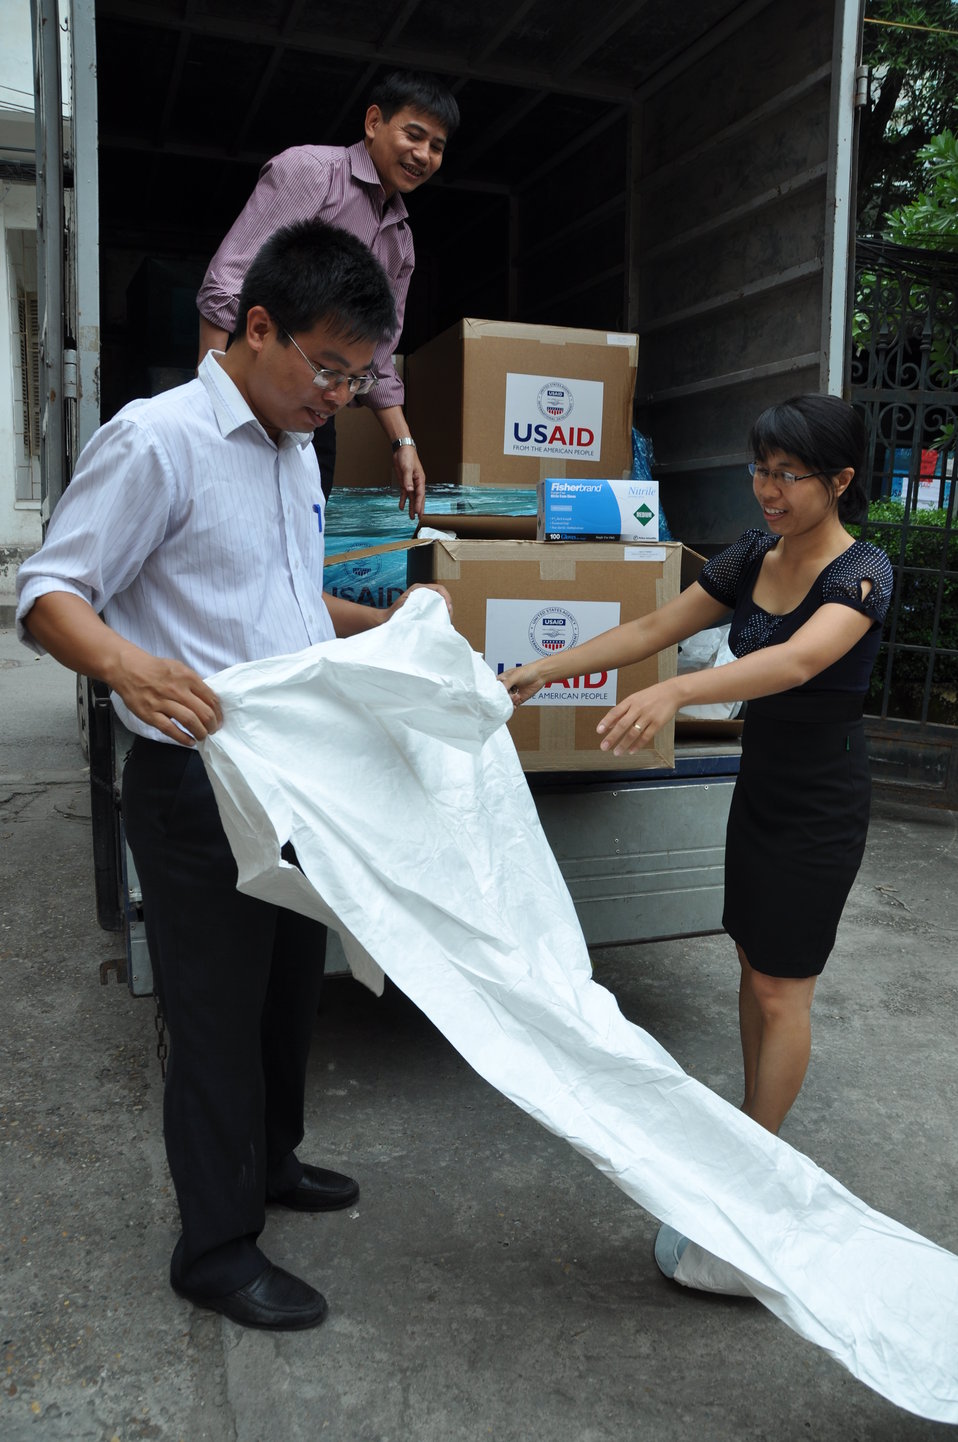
Vietnamese officials inspect new personal protective equipment in Hanoi in September 2011.

Nguyen Dug Hanh of Vietnam's Department of Animal Health (on truck), transport supervisor Doan Phu Huyen (left) and Nguyen Thi Thanh Diep inspect a shipment of 1,700 personal protection kits -- suits, masks, gloves, goggles and related items -- in September 2011 before they are shipped to Can Tho, Ha Nam, Hung Yen, Kieng Giang, and Quang Tri provinces to help veterinary officials and animal health workers battle disease outbreaks in the country. Since 2007, USAID has provided over 15,000 protective equipment kits for animal health workers in Vietnam.